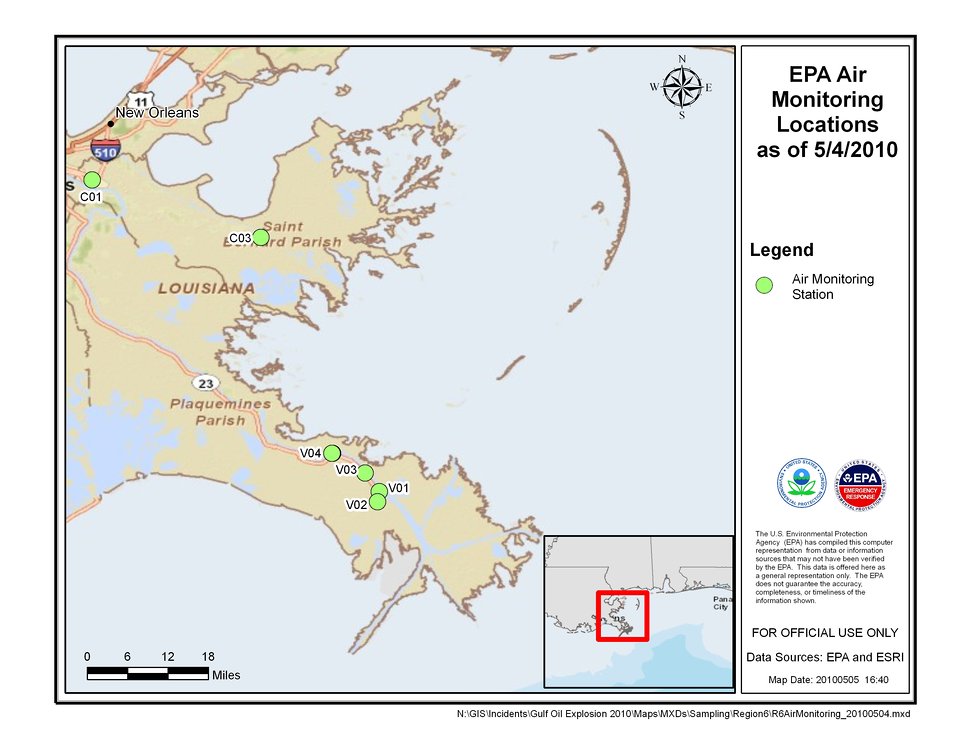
EPA Air Monitoring Locations May 4, 2010